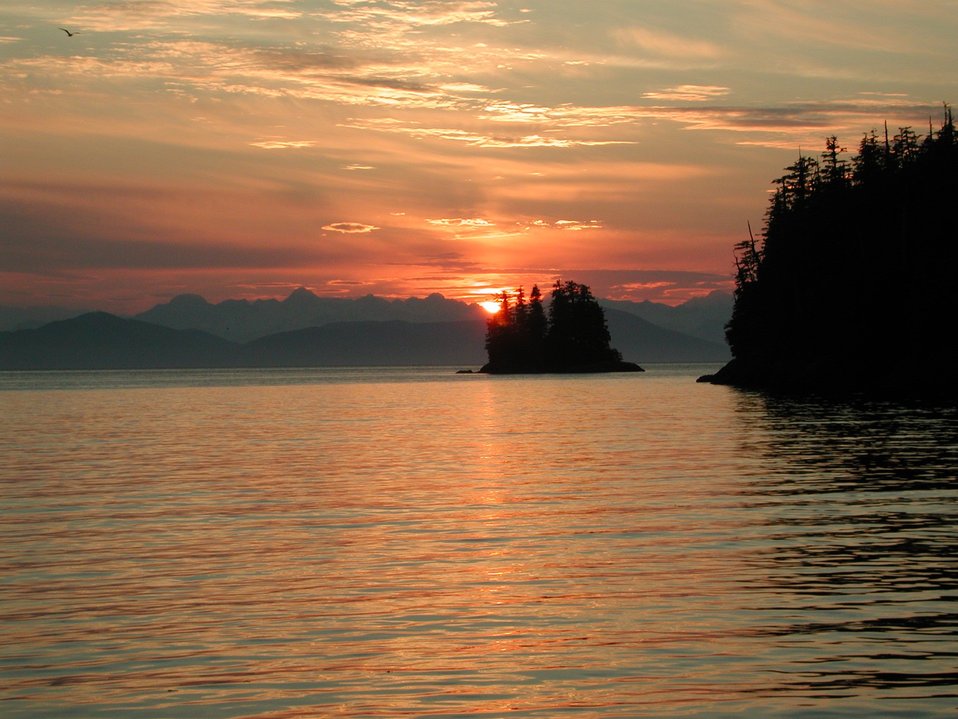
A Herring Bay sunset.